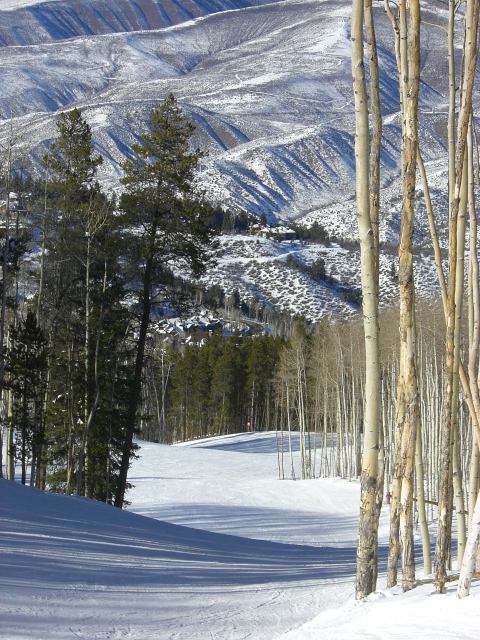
Uploaded by request of Linda Curhan

Taken at Beaver Creek, Colorado

Skiing in the mountains of Colorado is an amazing way to be one with nature. There were moments when no one was around and one could hear the snow talk...and the aspen trees whistle. Being in the mountains in the snow was a wonderful way to see the natural beauty of this amazing incredible Earth.